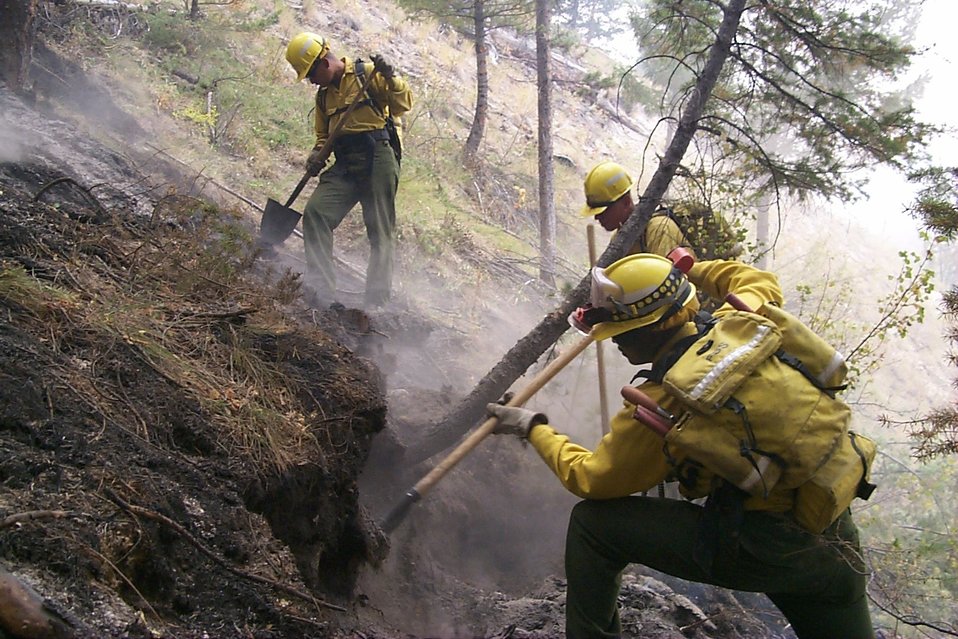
Line crew Fire Clearwater Fire Salmon Field Office USRD Upper Snake River District